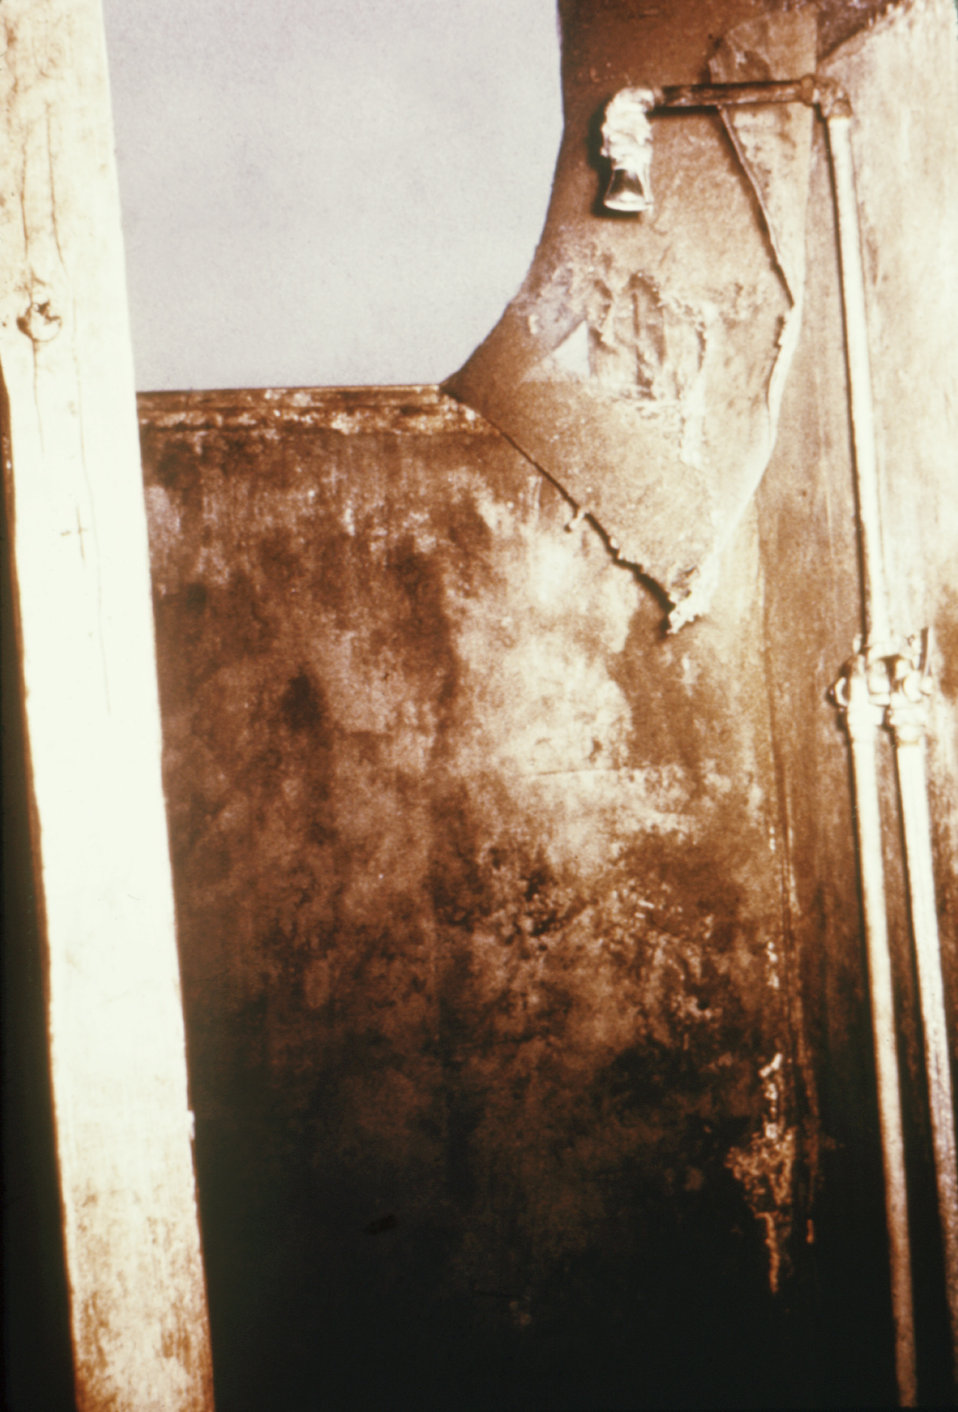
This was part of a series used to familiarize public health inspectors with sanitation conditions in migrant worker camps.